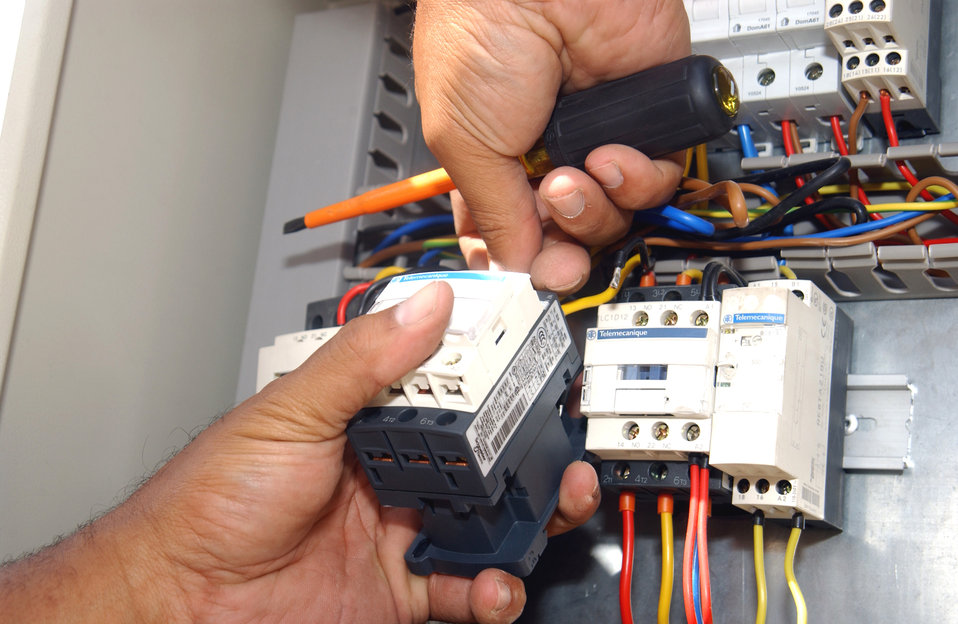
Keeping it cool

Master Sgt. Markus Taylor inserts a wire on a control unit for a freezer Oct. 11 in Southwest Asia. Sergeant Taylor made a repair to the freezer, which holds between $50,000 to $75,000 worth of food for better than 1,500 people at the 380th Air Expeditionary Wing. Sergeant Taylor is assigned to the 380th Expeditionary Civil Engineer Squadron deployed from Yokota Air Base, Japan.